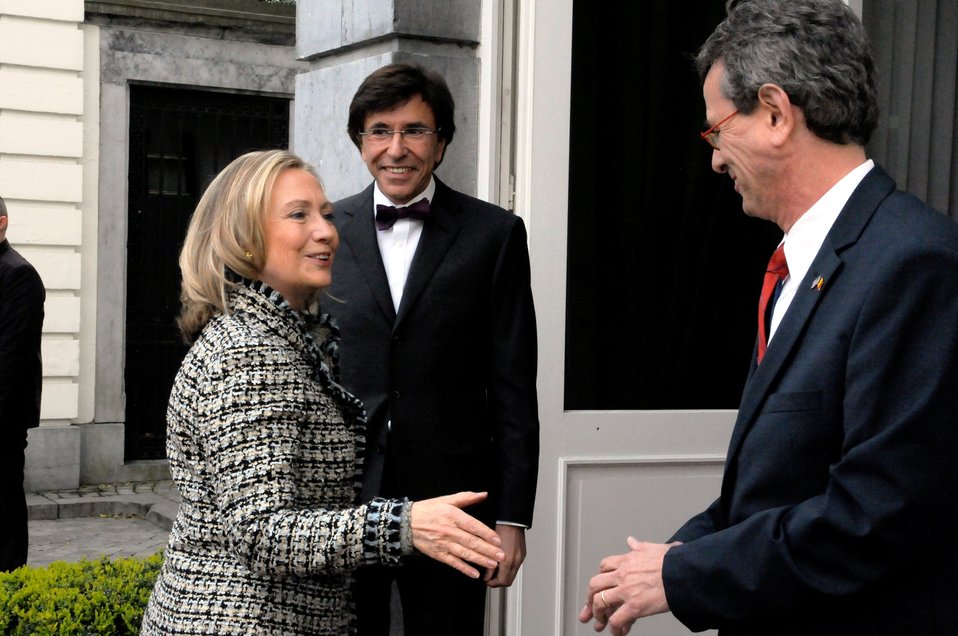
Secretary Clinton Is Greeted By Ambassador Gutman and Belgian Prime Minister Di Rupo

U.S. Secretary of State Hillary Rodham Clinton is greeted by U.S. Ambassador to Brussels Howard Gutman, right, and Belgian Prime Minister Elio Di Rupo, center, upon her arrival at the Prime Minister's residence in Brussels, Belgium, on April 18, 2012.